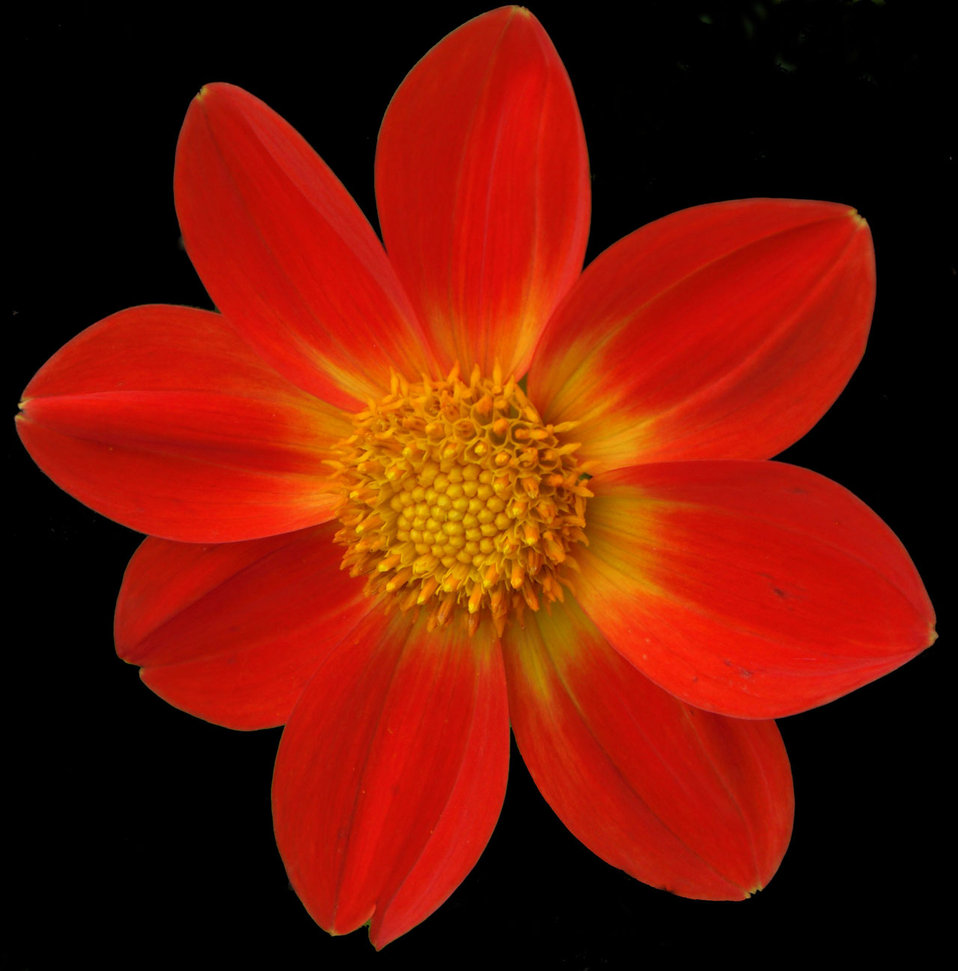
Alpine cherub

Red alpine cherub on black..